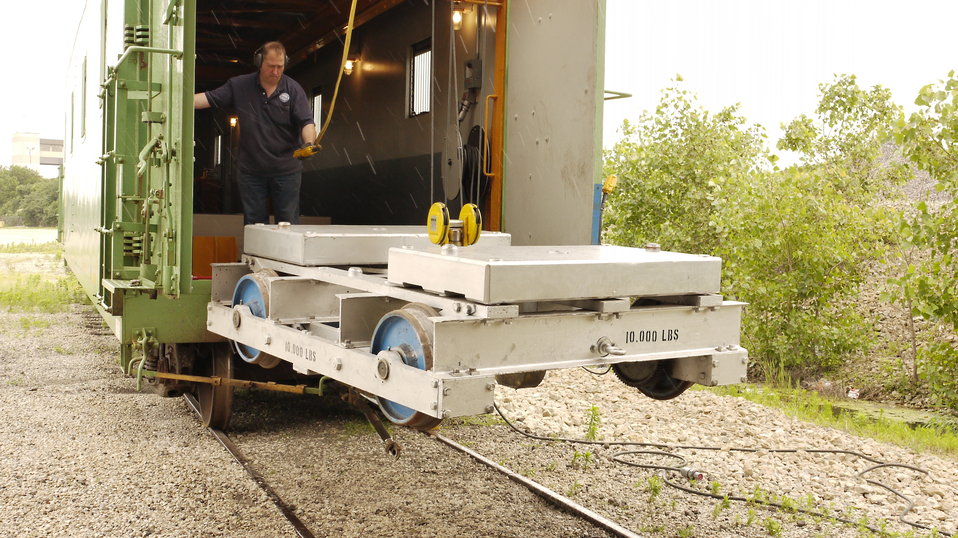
This is the U.S. Department of Agriculture’s (USDA) Grain Inspection, Packers, and Stockyard Administration (GIPSA) FGWX700000 test car unit with USDA GIPSA industrial specialist Marcus Harwitz unloading the 10,000 lb. test weight cart and 10,000 lb. test weight standards (blocks) at the USDA GIPSA Master Scale Depot in Chicago, IL on Jul 2, 2013. These weights can be loaded onto the test cart to make a total of a 100,000 lb. test weight group including the cart that is used to test railroad track scales for calibration. . USDA GIPSA entered into an agreement with the National Institute of Standards and Technology (NIST) and the Association of American Railroads (AAR) in 1980 transferring responsibility to USDA’s GIPSA to maintain the Master Scale facility in Chicago, IL and calibrate all the master scales in the continental U.S. annually.